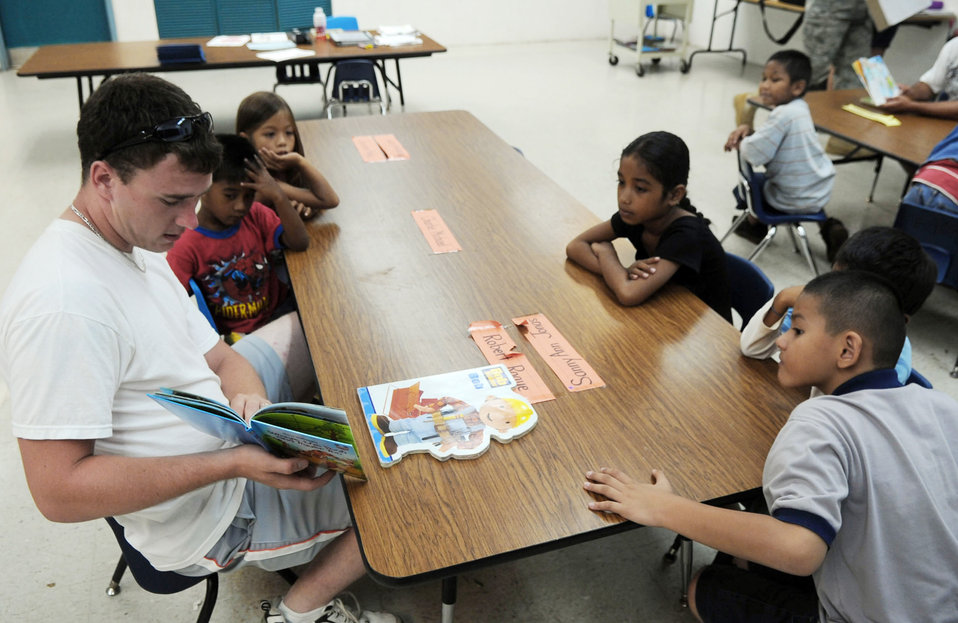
Airmen spend time with students during deployment

Airman 1st Class Justin Baker reads to kindergarten and first graders June 19 at Machananao Elementary School in Agana, Guam. The Chapel Hill, Tenn., native is deployed to Andersen Air Force Base, Guam, from Elmendorf AFB, Alaska, to support U.S. Pacific Command's continuous bomber presence in the Asia-Pacific Region. Airman Baker is a 3rd Expeditionary Maintenance Unit weapons load crew member.